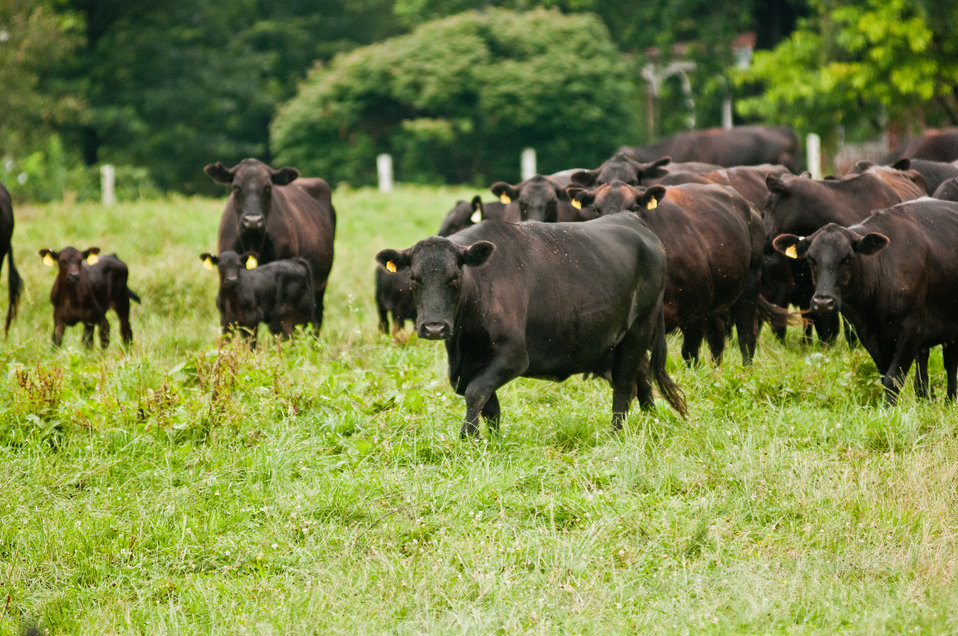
Black Angus cows and calves graze organic pastures, and for added nutrition and variety, they enjoy a daily feeding of sweet silage at Nick’s Organic Farm, owned by Nick Maravell, in Adamstown, MD on Friday, July 12, 2013. The white plastic wrapped bales of pasture grass and alfalfa have been fermenting for months to create sweet silage that stores well and can be used to feed cattle at varying amount all year long. The fermentation process sweetens the taste and increases the vitamin levels. The farm produces Black Angus beef, chicken, turkey, eggs, hay, soybeans, corn, alfalfa, orchard grass, rye; and other crops. The cattle are 100% grass-fed receiving certified organic pasture, certified organic hay (in winter), water and mineral salts mixed with sea kelp. The cattle are not fed hormones, antibiotics or animal products. Poultry feed from grain is ground from organic grain. The poultry also graze on organic pastures. The farm has conducted on-farm research with federal, state and non-profit agencies to refine organic practices. An organization such as the U.S. Department of Agriculture (USDA) Agricultural Research Service (ARS) center in Beltsville has been able to conduct research to improve organic crops and to breed and manage the cattle so that they have.